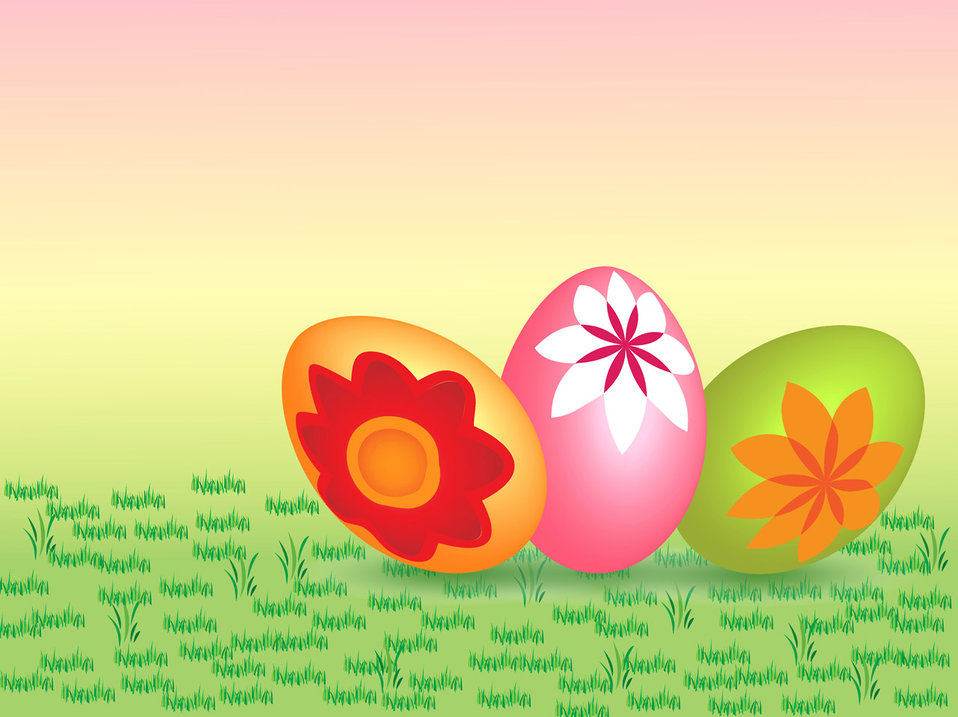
Yellow pink easter eggs

Three coloured easter eggs on a grass with yellow pink background.